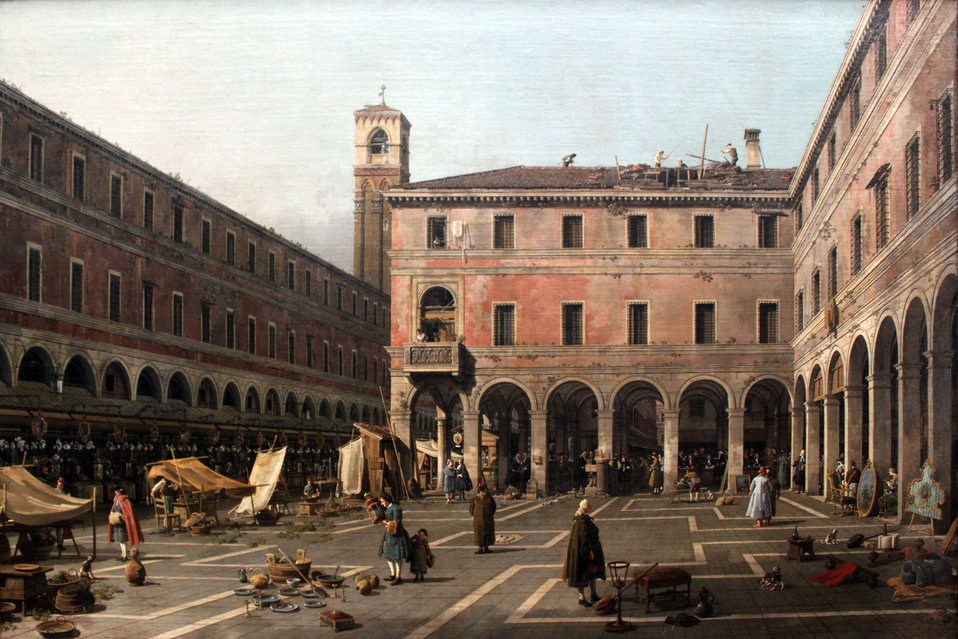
1760 Canaletto Campo di Rialto anagoria